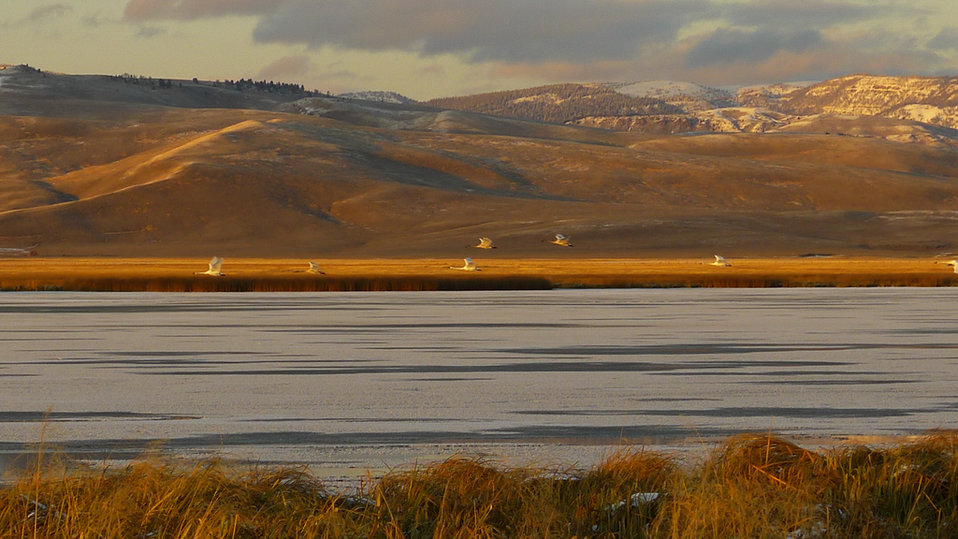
trumpeter swans in flight

Lower Red Rock Lake
Red Rock Lakes National Wildlife Refuge, MT
early autumn 2011